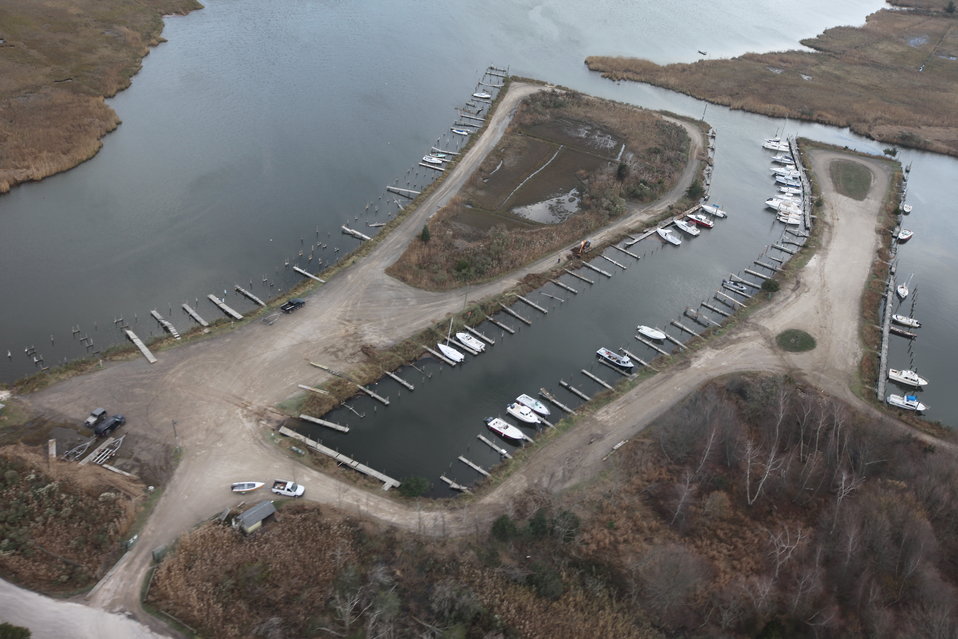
Damaged docks at Wertheim National Wildlife Refuge (NY)

Damaged docks near Wertheim National Wildlife Refuge in Long Island, NY after storm Sandy.